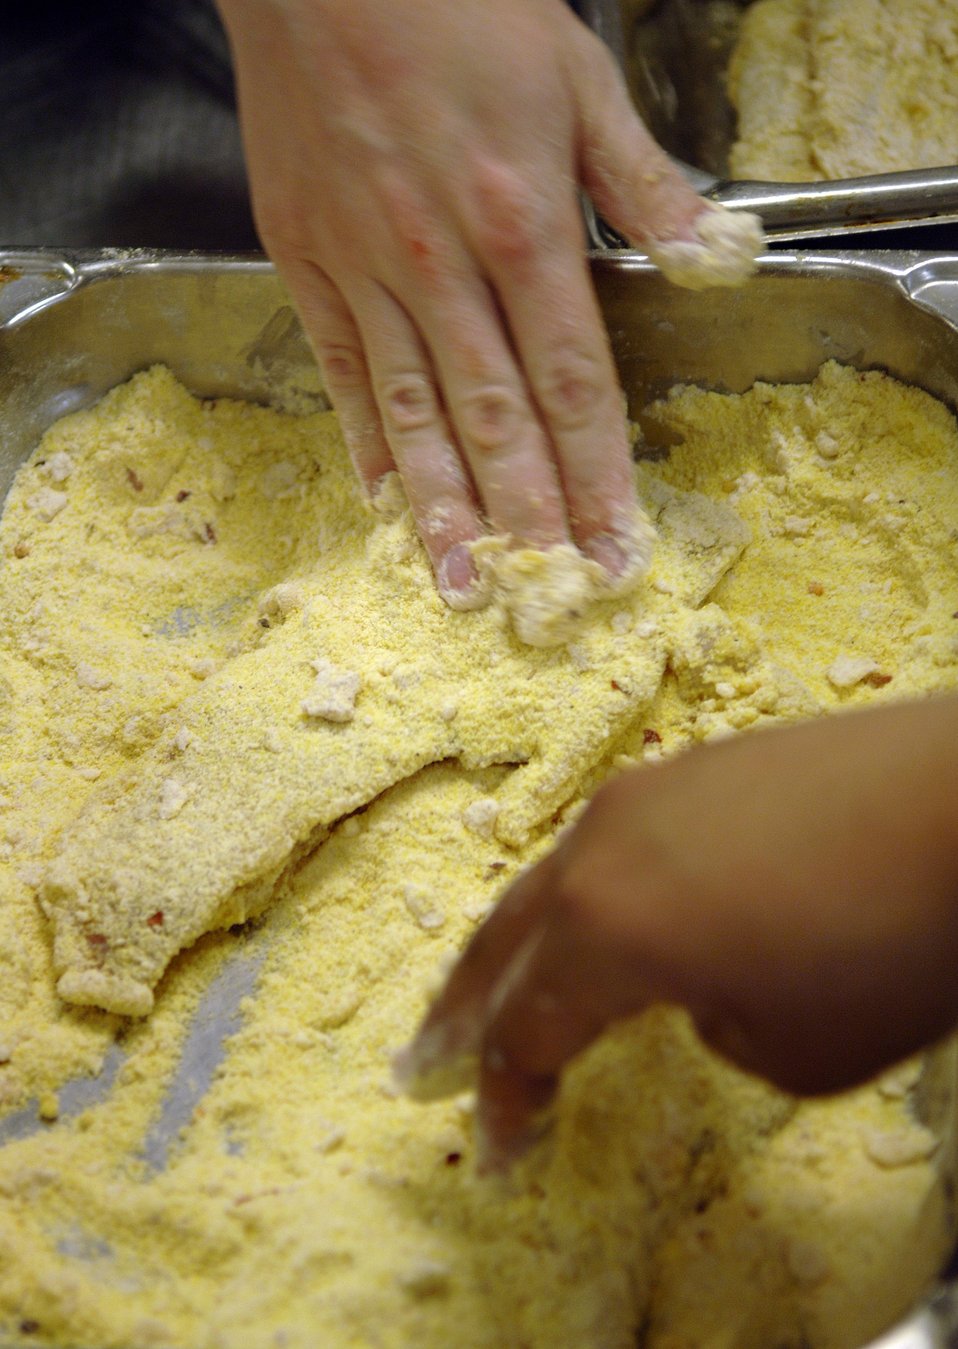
Feeding warriors

LACKLAND AIR FORCE BASE, Texas (AFPN) -- Airmen prepare dinner at the culinary arts training school during the services apprentice course here. The 31-day course consists of teaching all facets of the services technical trade.